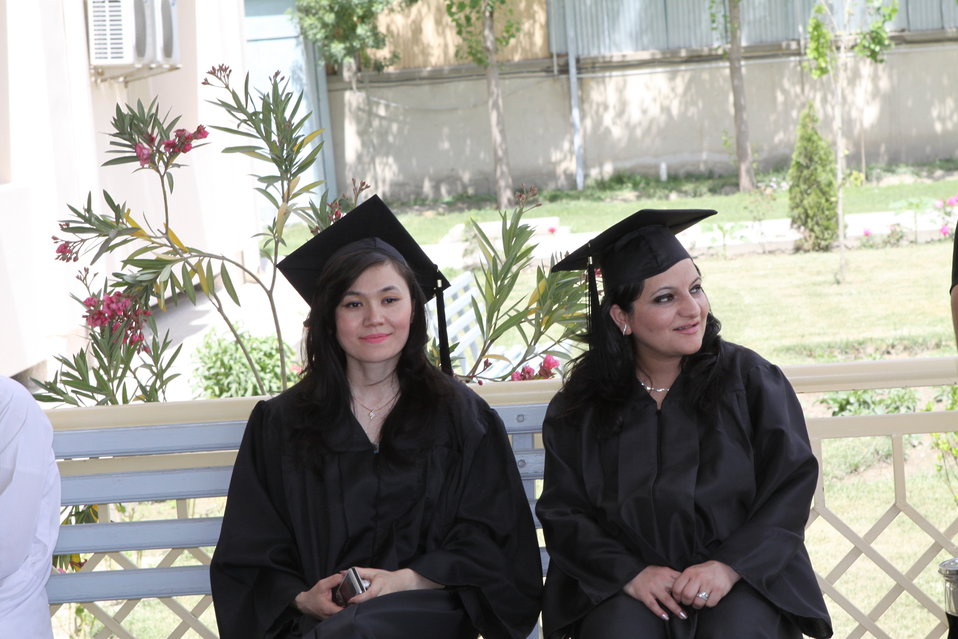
100526 AUAF Graduation 007